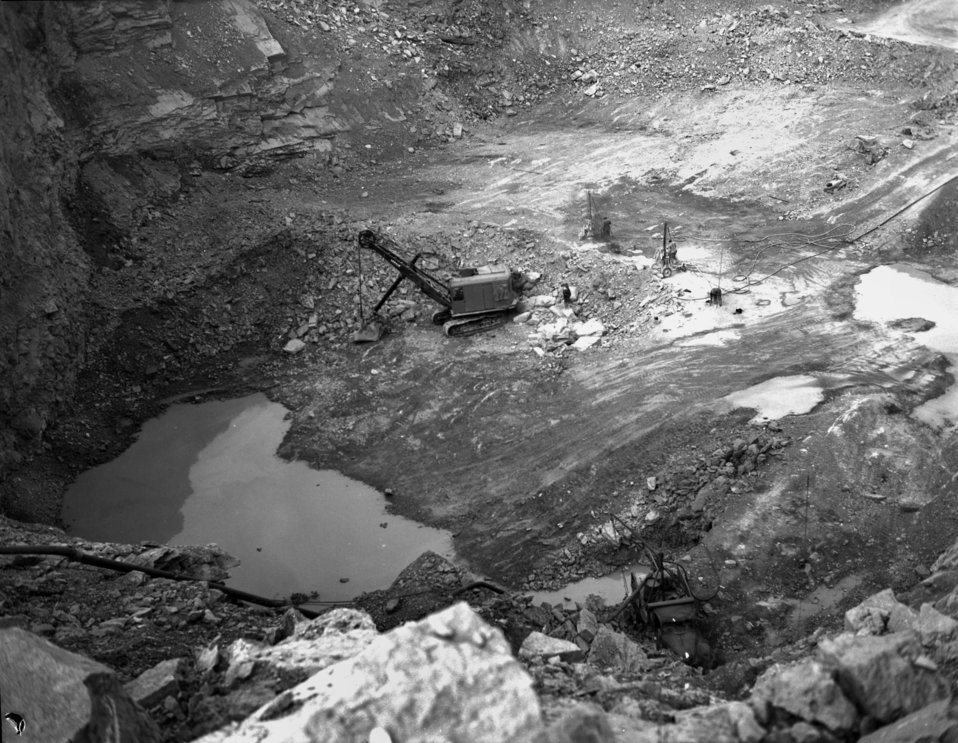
Quarry Oak Ridge

3263-6f DOE photo Ed Westcott 1-23-1947